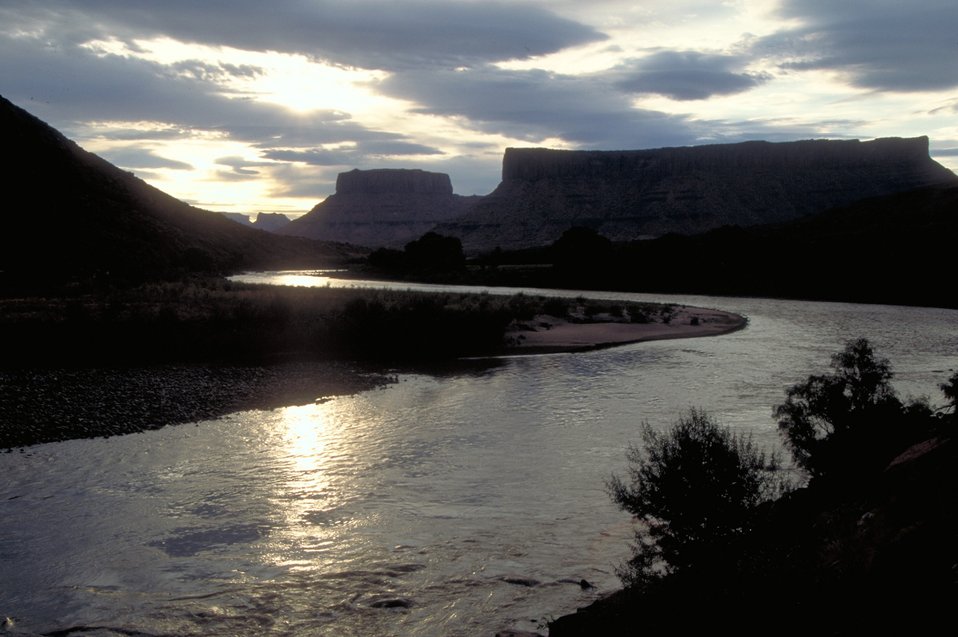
Colorado River near Moab, Utah.